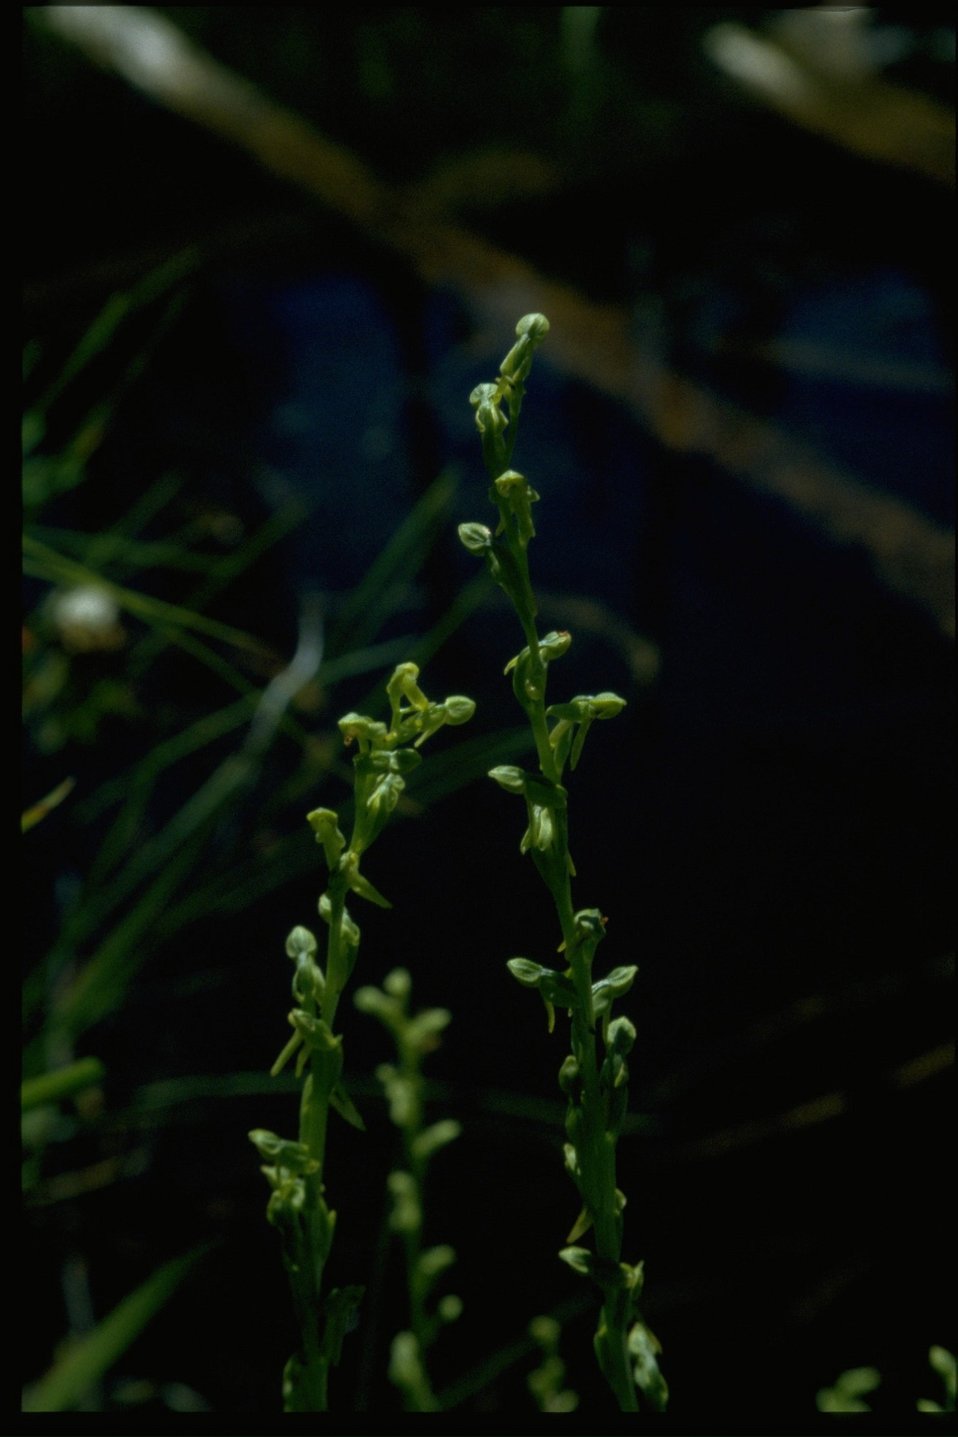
Medium shot of Platanthera sparsiflora.